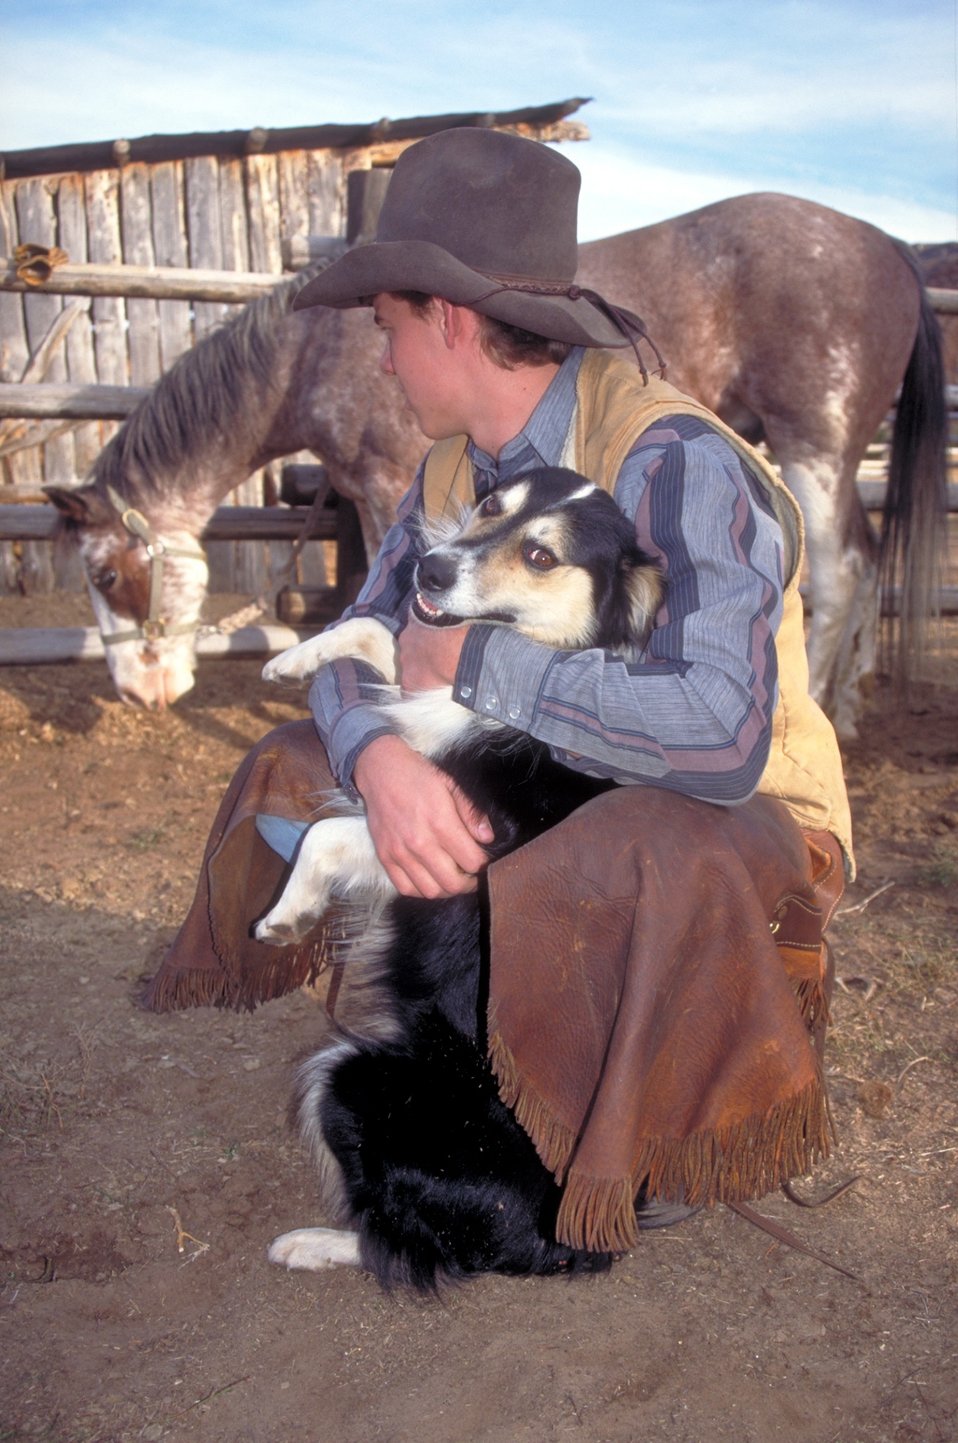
Working cowboys living near Vernal, Utah.